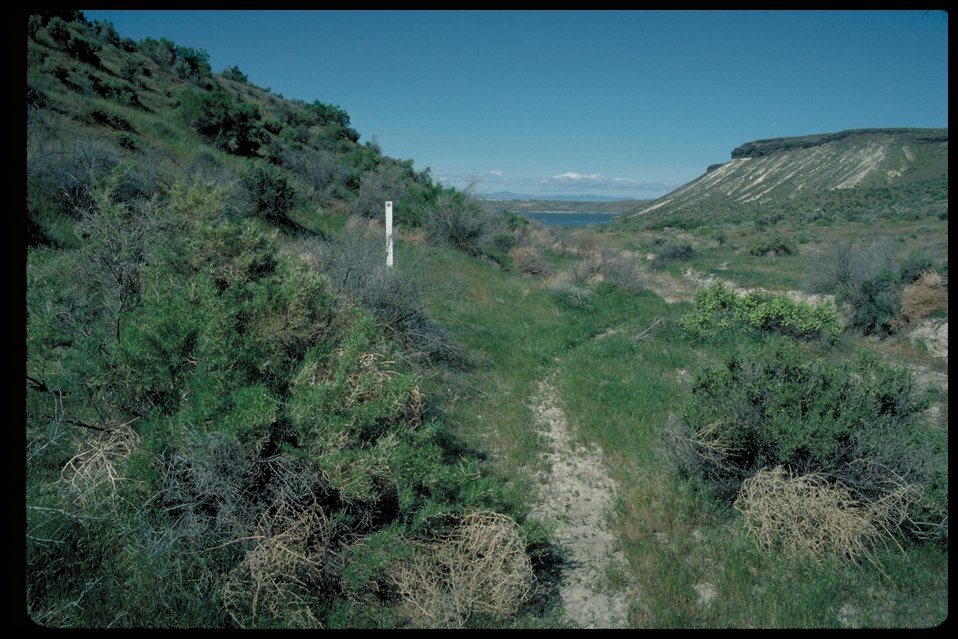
Oregon Trail near Strike Reservoir Lower Snake River District